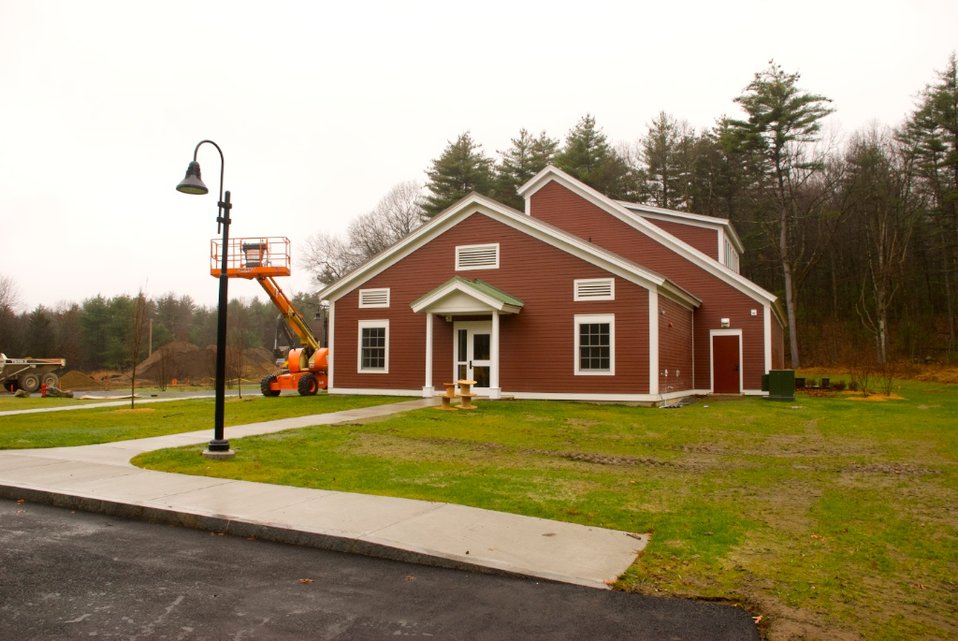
Assabet River NWR Visitor Center

In 2010, the U.S. Fish and Wildlife Service will open the doors to a new energy efficient administrative and visitor center for the Eastern Massachusetts National Wildlife Refuge Complex at the Assabet River refuge in Sudbury, Mass.

American Recovery and Reinvestment Act funding will support the fabrication and installation of exhibits that will enhance visitors' experience with information about the refuge's wildlife, habitats, and recreational opportunities.